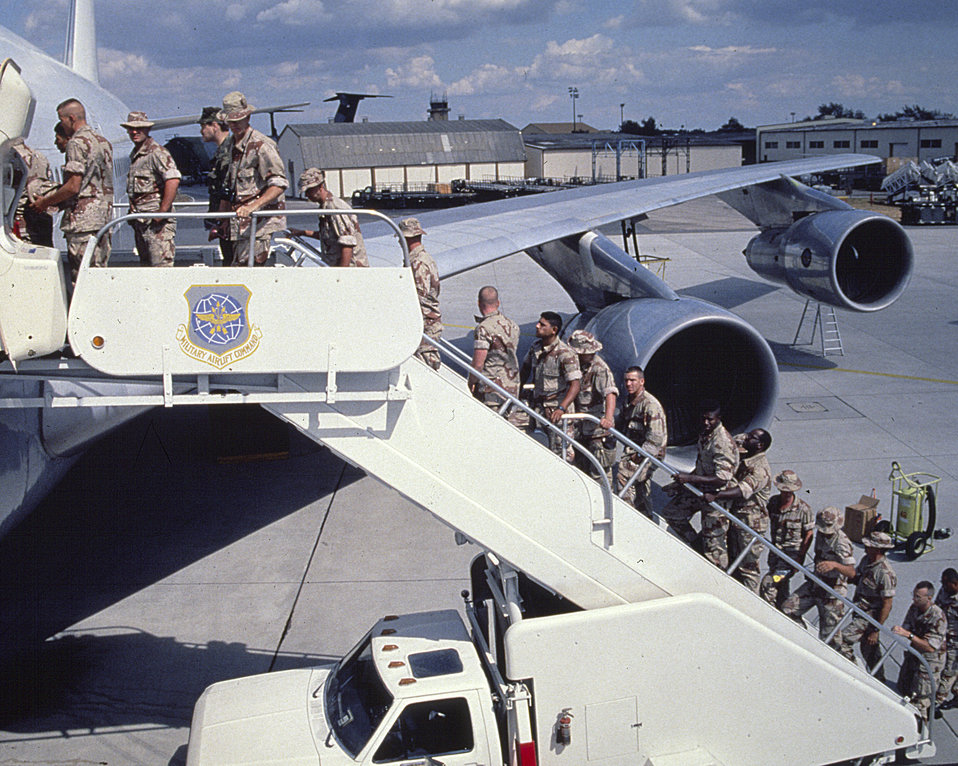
Troops boarding for Desert Storm